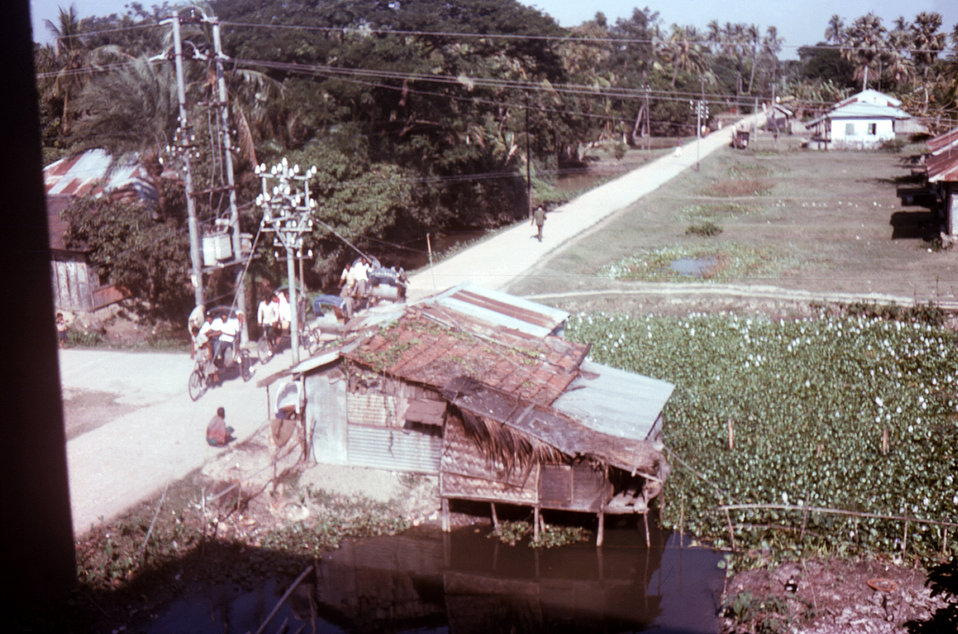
From a window in the Hotel Bonanee, one could see a food stall below. During the smallpox eradication efforts of the 1970s, the Hotel Bonanee became the local Smallpox Office and Residence, in Patuakhali Town, located in the Patuakhali District, in the country of Bangladesh. See PHIL 12358, for an interior view of this busy market.